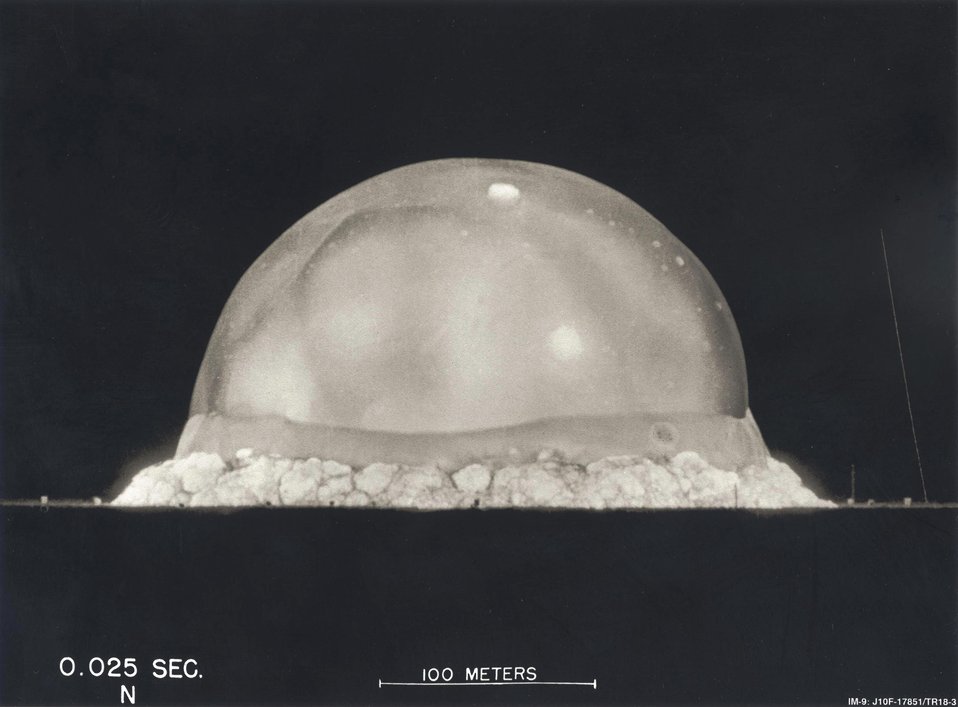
TRINITY AT 00.025